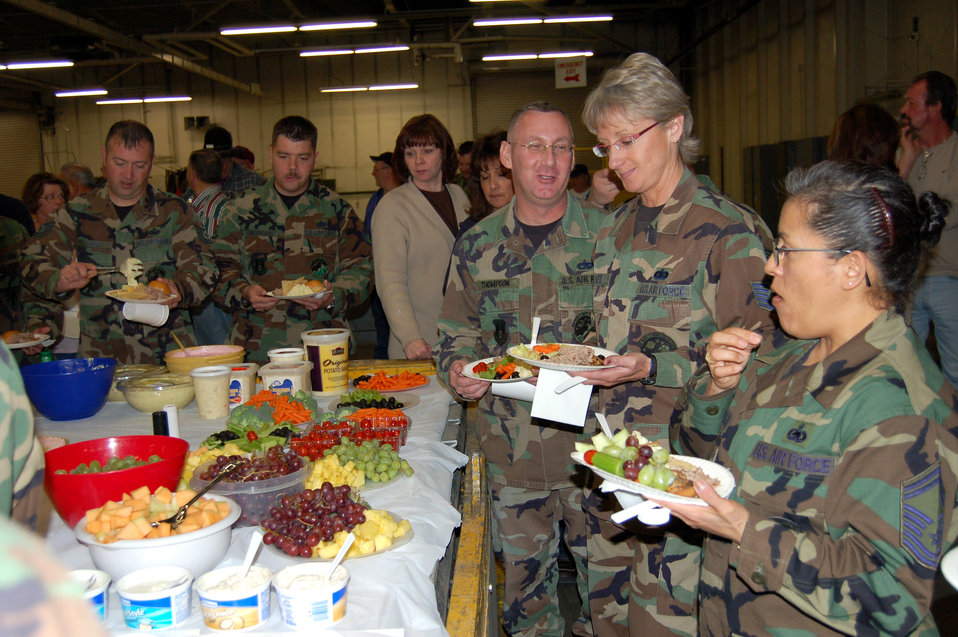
Hill AFB welcomes deployed Airman at Warrior Welcome

At right, Senior Master Sgt. Deborah Francavilla and Tech. Sgts. Lynn Fyanes and Andrew Thompson were among the first in line at the Warrior Welcome at Hill Air Force Base, Utah, March 15. The NCOs are assigned to the 75th Logistics Readiness Squadron.